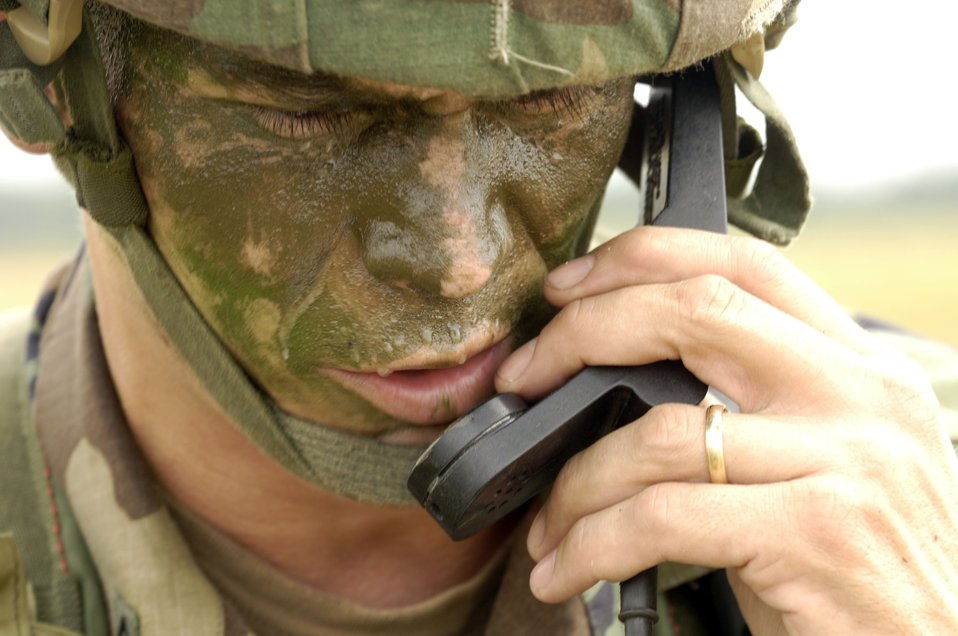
Testing joint capabilities

Army Master Sgt. Chad Etzel communicates his location to higher headquarters Aug. 21 during a joint forcible entry exercise with the Air Force on the East Coast. The JFEX training exercise is designed to validate combat readiness, leadership, planning staff, aircrews and ground forces in joint airborne warfighting capabilities through integrated scenario-based training operations. Sergeant Etzel is assigned to the 20th Engineer Battalion at Fort Bragg, N.C.